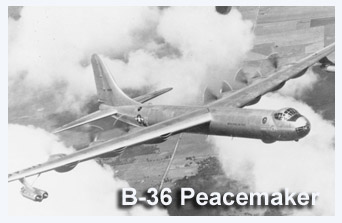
B-36 Peacemaker arrives

On June 26, 1948, the 7th Bombardment Group received the Air Force's first operational B-36 Peacemaker heavy bomber. The B-36 was the largest American bomber every produced as its 230 foot wingspan was almost 50 percent longer than that of the B-52 Stratofortress that replaced it.